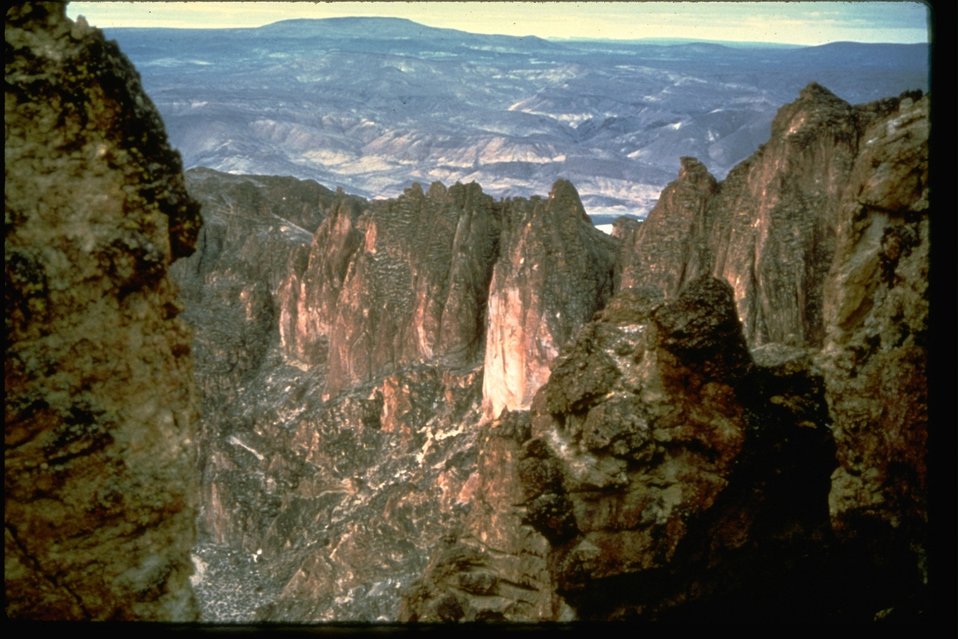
Honey Combs Wilderness Study Area. OR 3-77A.